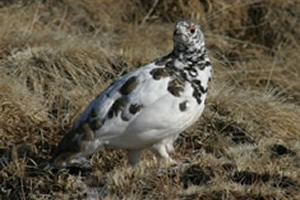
White-tailed Ptarmigan in Summer Plummage

Male and female white-tailed ptarmigan share similar body size, shape, and winter plumage, with adult body lengths up to 13.4 inches (34 centimeters) and body masses up to 0.9 pound (425 grams). Both the southern and Mt. Rainier white-tailed ptarmigan are white in winter and brown in summer, the feathers changing color with the seasons to camouflage the birds. Although the body feathers change color, the white-tailed ptarmigan is named for its perpetually white tail feathers, a morphological trait that distinguishes it from other ptarmigan species. During the winter, males and females are stark white and difficult to distinguish from the background of snow. In the summer during the breeding season, males turn a lighter color of brown or gray than females and develop a dark band of feathers on the breast that resembles a necklace.

During the winter, the southern and Mt. Rainier white-tailed ptarmigan feed on exposed willows above the snow and dig roosts, or burrows, into the soft snow as protection from wind and weather. During the summer, the white-tailed ptarmigan feeds on willows and other alpine vegetation. White-tailed ptarmigan require cool temperatures, rocky areas, soft snow, and the presence of willows. The southern and Mt. Rainier white-tailed ptarmigan spend their entire lifecycles in alpine habitats and are well adapted to survive in the cold, arid, and open alpine environments. Adaptations of the white-tailed ptarmigan to these alpine environments include its cryptic plumage, low metabolic rates, and heavily feathered feet that act as snowshoes.